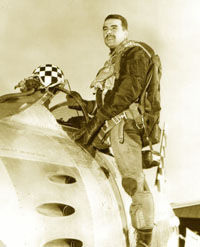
51st Fighter Wing Aces

First Lt. Henry Buttelmann became 13th ace of the wing on June 30, 1953. He was the second youngest ace of the war at 24 years, 5 months. Lieutenant Buttlemann was assigned to the 25th Fighter-Interceptor Squadron.